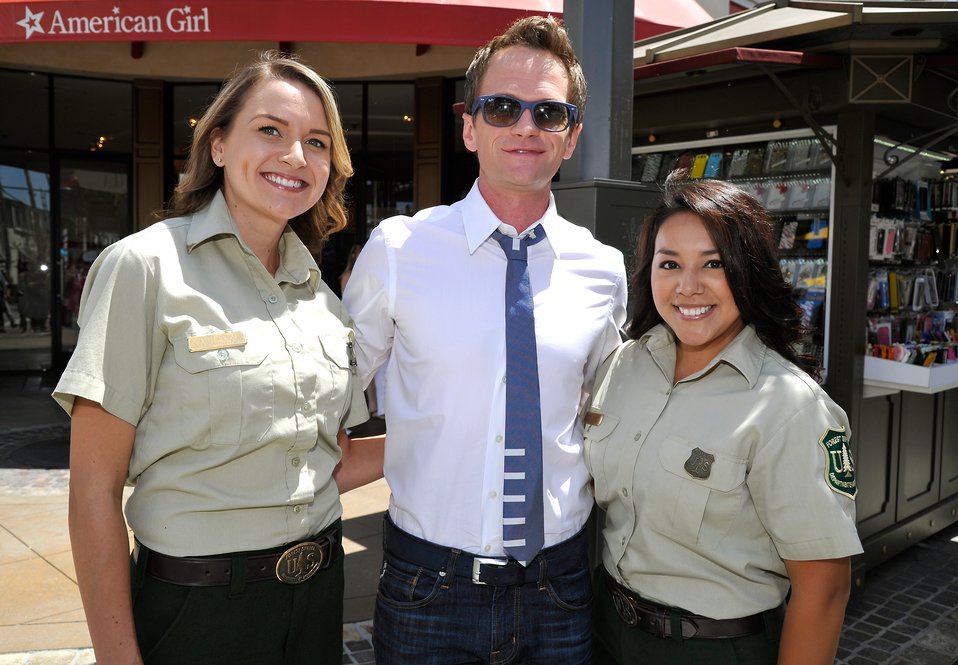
U.S. Forest Service rangers from Cleveland National Forest Ashley Taylor and Marithza Hernandez meet The Smurfs 2 star Neil Patrick Harris during an event promoting the Discover the Forest campaign in Los Angeles, CA. To encourage children and adults to “unplug” and get outdoors, the U.S. Forest Service’s Discover the Forest campaign has partnered with Sony Pictures to launch a series of public service announcements (PSAs) and educational materials featuring characters from the animated adventure, The Smurfs 2. The PSAs and the educational materials aim to encourage parents, caregivers and their children to go out to the forest to experience the wonder and magic of nature.